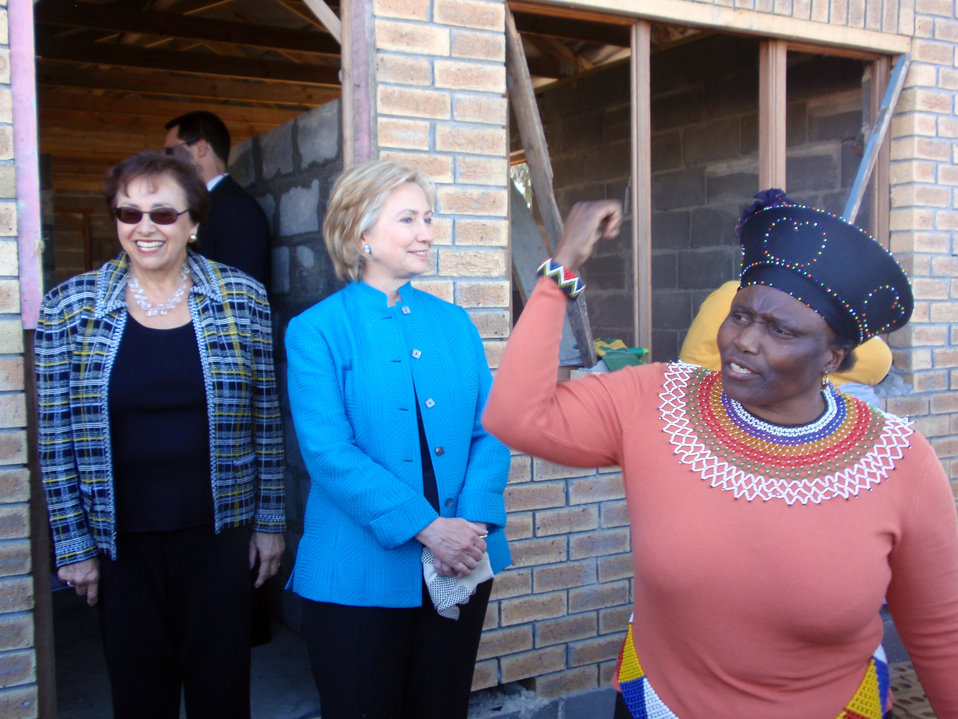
Secretary Clinton Visits Victoria Mxenge Housing Development

U.S. Secretary of State Hillary Rodham Clinton, U.S. Congresswoman Nita Lowey, and Patricia Matolengwe at Victoria the Mxenge Housing Development in Cape Town, South Africa August 8, 2009.